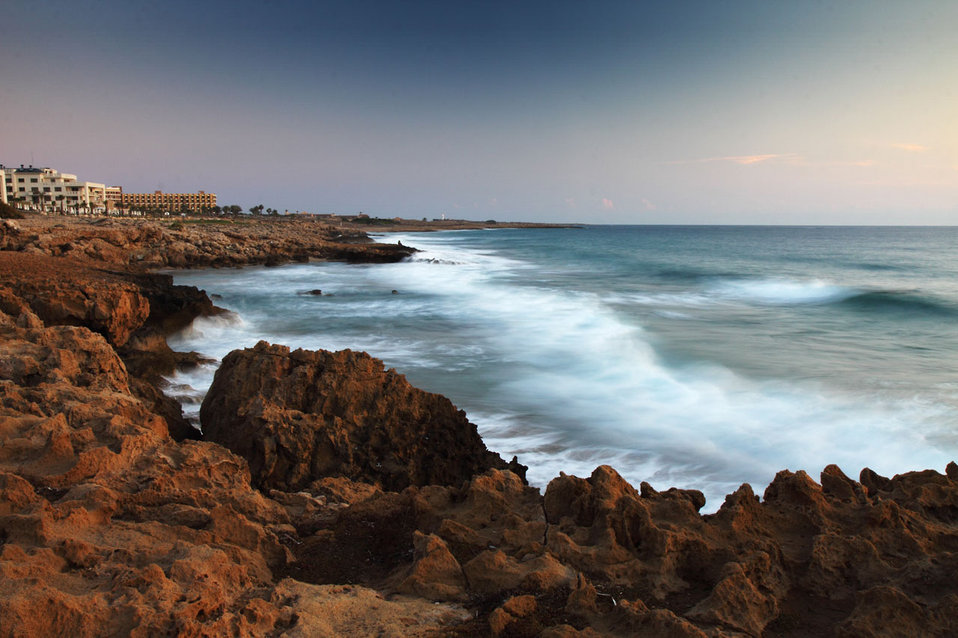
Blurred waves

Picture of coast taken with slow shutter speed.